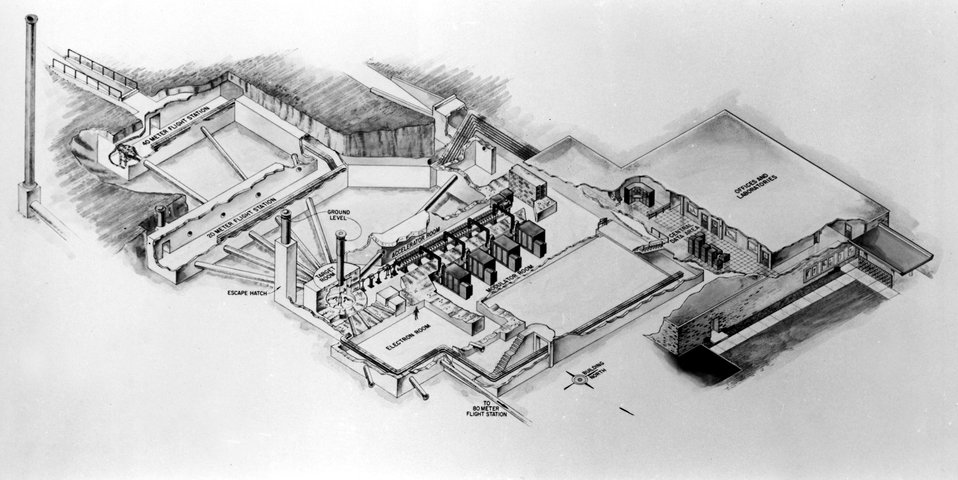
Layout of the Atomic Energy Commission's Oak Ridge Electron Linear Accelerator, Oak Ridge, Tenn. The accelerator is located in an underground room shown near the center of the drawing. c. 1972